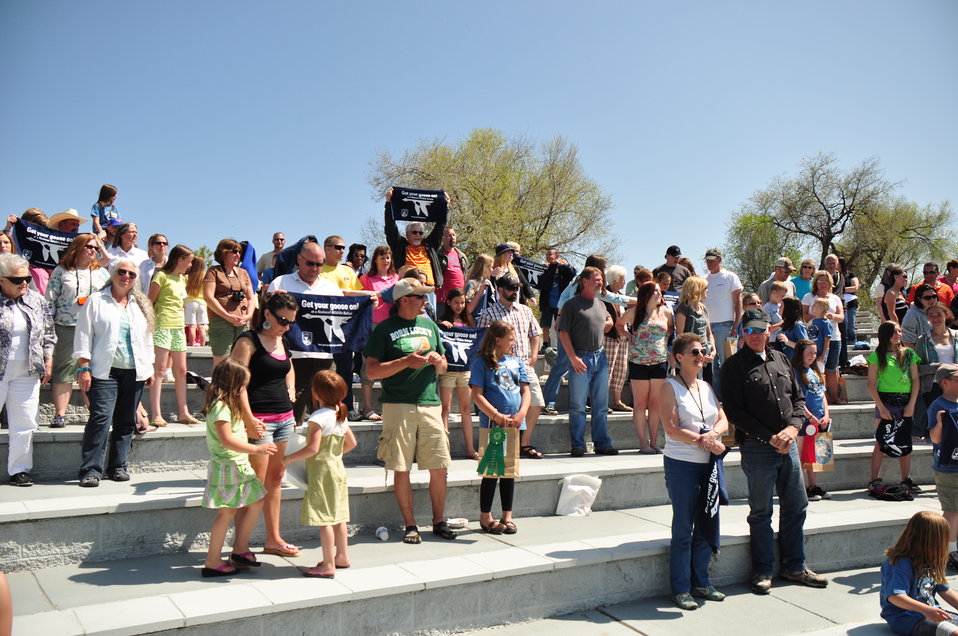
Get Your Goose On!!!

More than 100 people attended the 2012 Montana Junior Duck Stamps award ceremony. The folks pictured here posed with their towels as a videographer captured footage of them screaming, in unison, 'Get Your Goose On!'